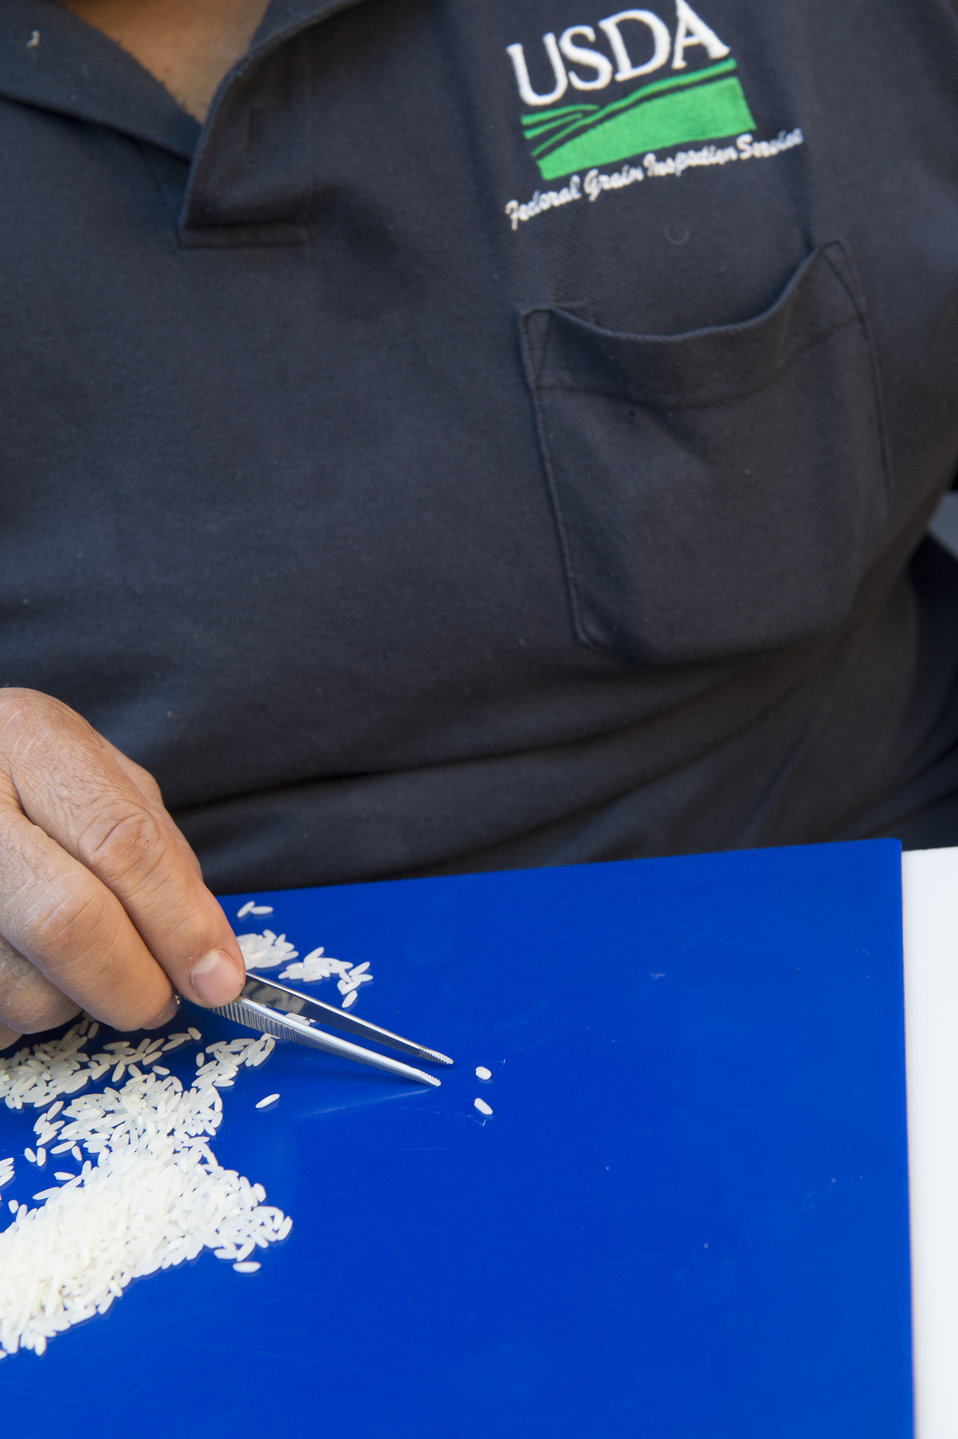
U.S. Department of Agriculture (USDA) Grain Inspection, Packers and Stockyards Administration (GIPSA) Federal Grain Inspection Service (FGIS) employee examines rice samples at the FGIS inspection laboratory in New Orleans, LA on Monday, Nov. 18, 2013.